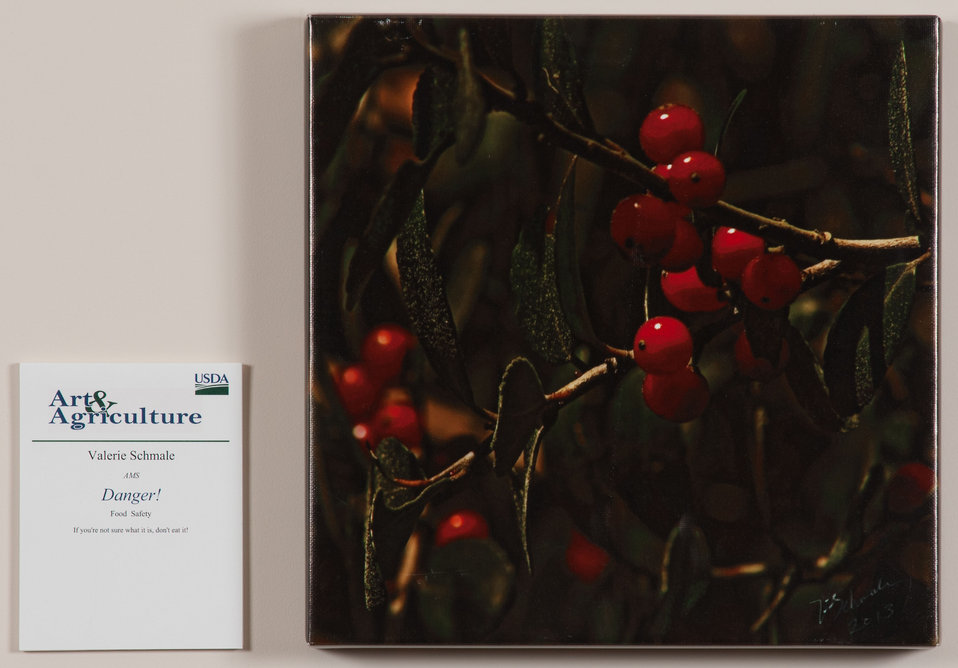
Online Viewer's Choice entries of the 2013 Art & Agriculture, Tuesday, July 9, 2013, in the South Building, Washington, D.C. Themes were expressed by employees from across the department and the contest was open to full-time and part-time USDA employees. Winning artwork will be displayed till the end of the year. U.S. Artistic expression is a creative outlet that is vital for an individual to grow and develop.